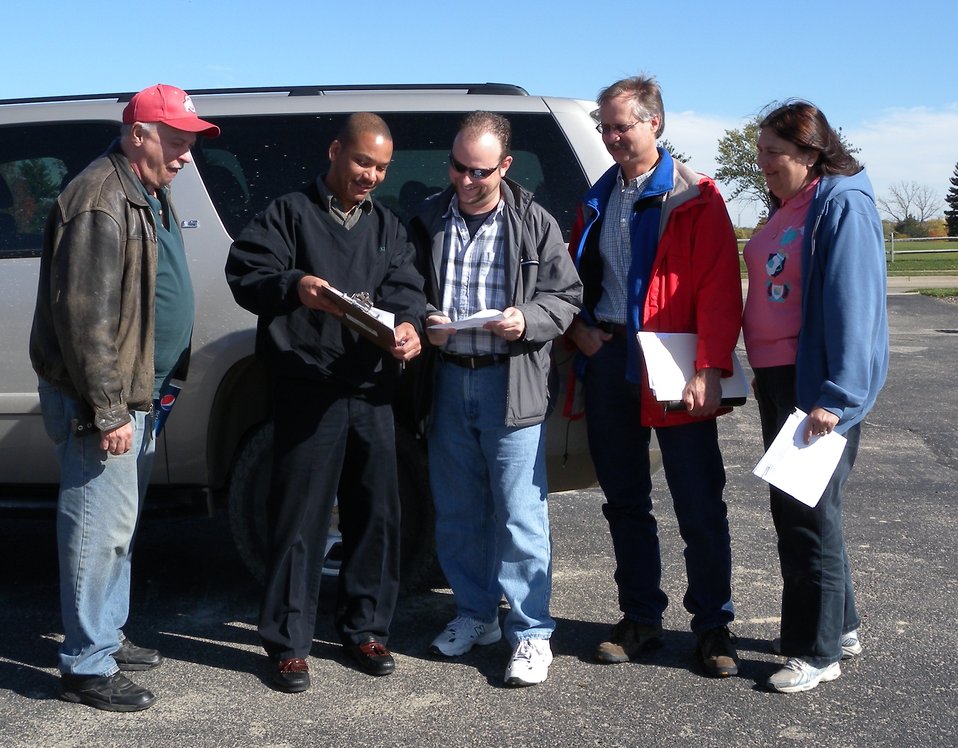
Recovery Act Project Brings End to Mound Site Cleanup Activities

The Recovery Act invested $17.9 million in the completion of EM’s legacy cleanup activities at the Mound Site in 2010.
Recovery Act workers disposed nearly 20,000 cubic meters of soil and demolition debris in the cleanup, which focused on the Operable Unit-1, a former mixed-waste landfill at the 306-acre site. The Recovery Act cleanup was the final remediation project at Mound.
The federal government is in the process of transferring ownership of the site to the Mound Development Corporation, a community reuse organization.